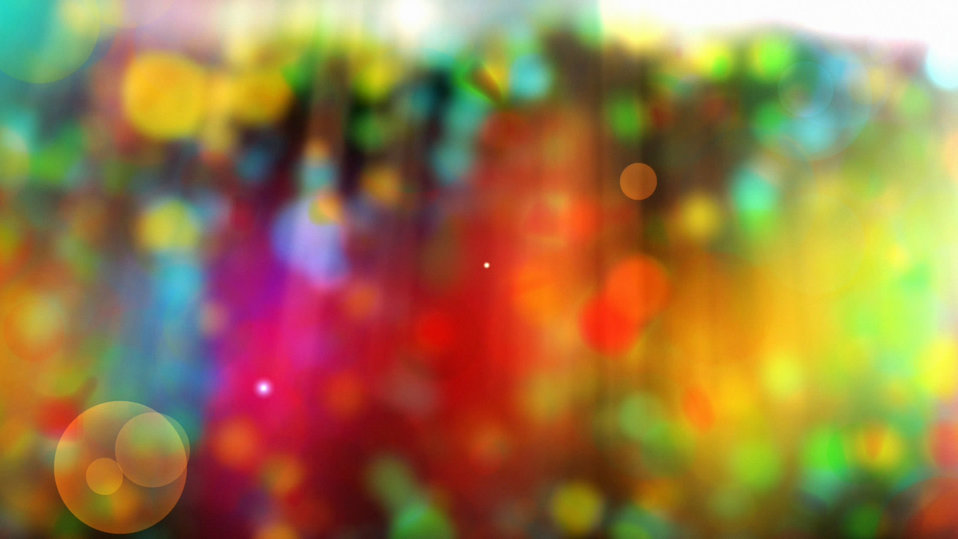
Spring colored background

Colorful spring background with luminous balls.